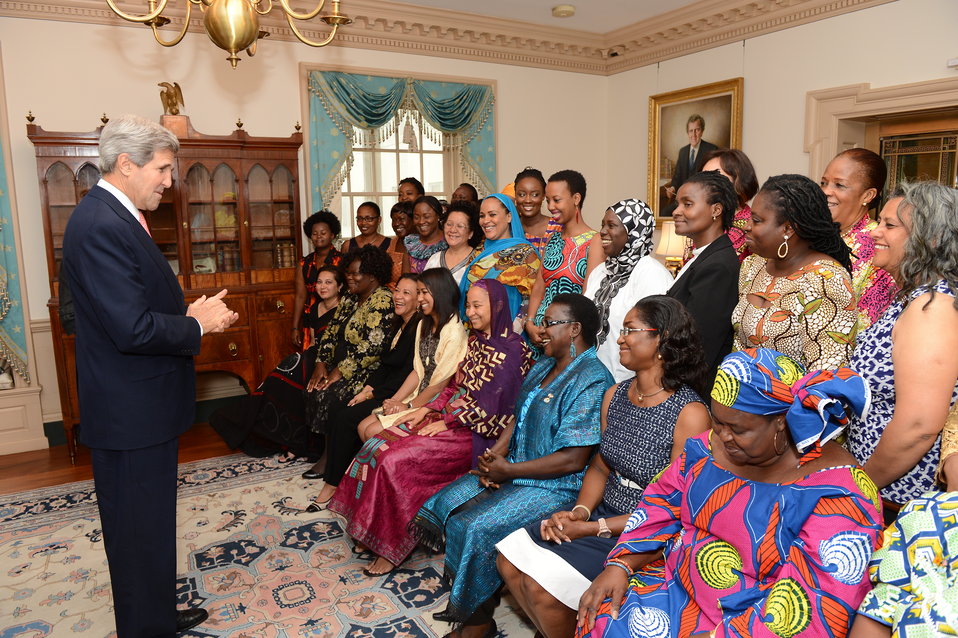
Secretary Kerry Meets With African Women’s Entrepreneurship Program Delegates

U.S. Secretary of State John Kerry meets with African Women’s Entrepreneurship Program (AWEP) Delegates at the U.S. Department of State in Washington, D.C., on August 6, 2013.